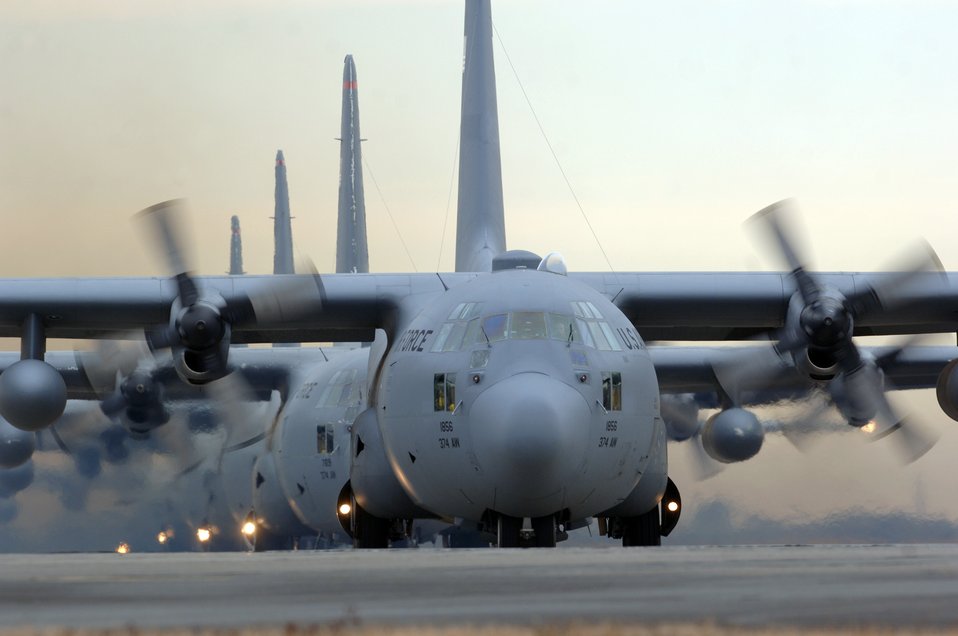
Ship sortie

YOKOTA AIR BASE, Japan (AFPN) - C-130 Hercules aircraft taxi out for a mission during a six-ship sortie here. The 36th Airlift Squadron is the only forward-based tactical airlift squadron in the Pacific region. The unit maintains a forward presence and supports combat operations by moving people and equipment.